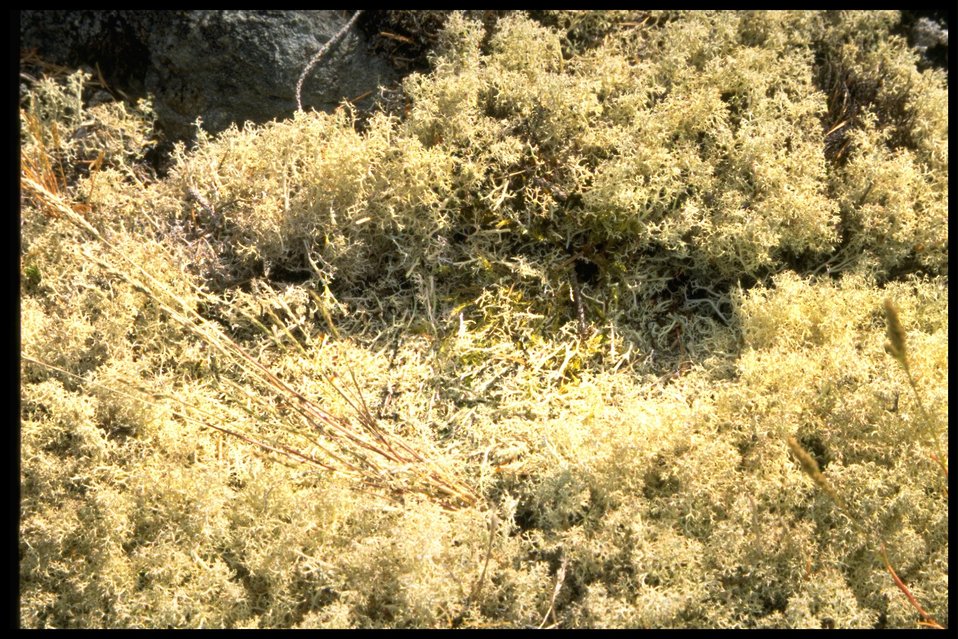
Lichen at Point Colville with a depression of possibly a foot print where someone turned.